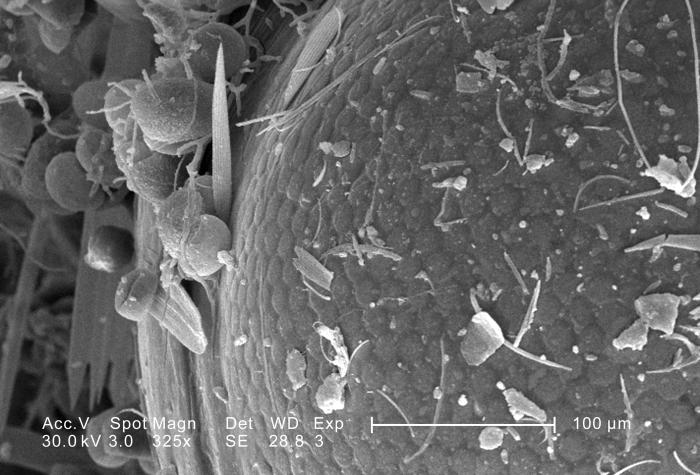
This scanning electron micrograph (SEM) depicted a highly magnified view of a compound eye of an unidentified green-colored flying insect found outside on the ground in the Decatur, Georgia suburbs; Magnified 325x. The debris covering the organism is mainly vegetative in nature, composed primarily of pollen granules, and disintegrated plant fibers.